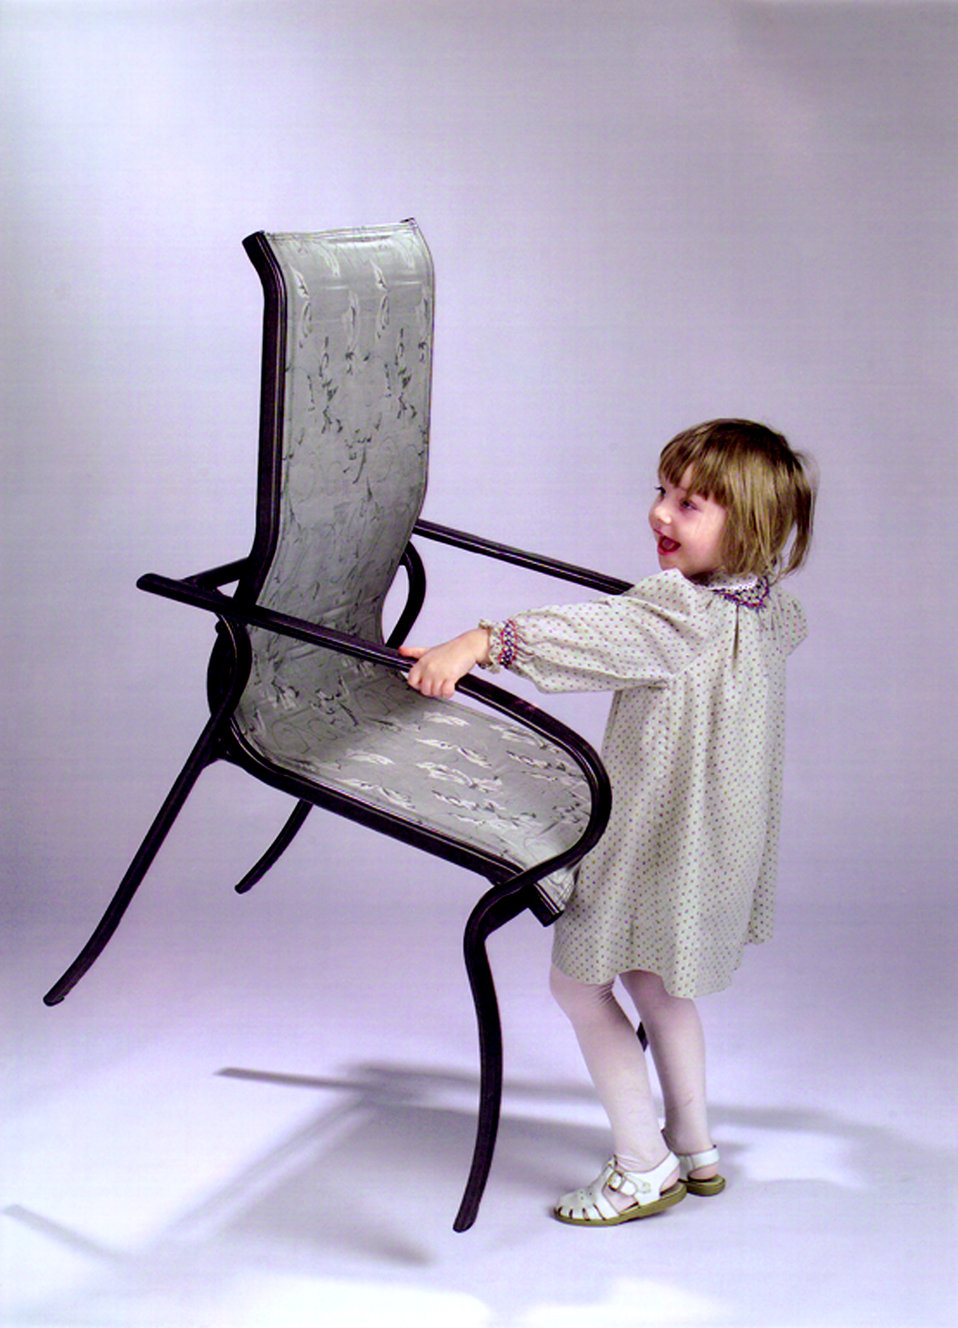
This is one of a series of ten images, (PHIL# 9144 - 9153), depicting one of LifeSpan� Furnishing's line of chairs, which was designed to make sitting down and rising safer and easier, and sitting more comfortable and supportive. The light-weight nature of these chairs was exemplified in this image showing a very young girl lifting one entirely off the ground. These chairs combined aesthetics and function, and were more comfortable for most people, benefiting those who would care for others, by reducing physical exertion and stress needed when assisting others. The user could take advantage of the extended arms for stability when lowering or rising from a seated position. Close attention was paid to many small details including the non-skid rubber feet, and the elimination of pinch points and sharp edges. The LifeSpan� seating product line included four different designs, all based on an extended arm and leg concept that provided users with better leverage and support.